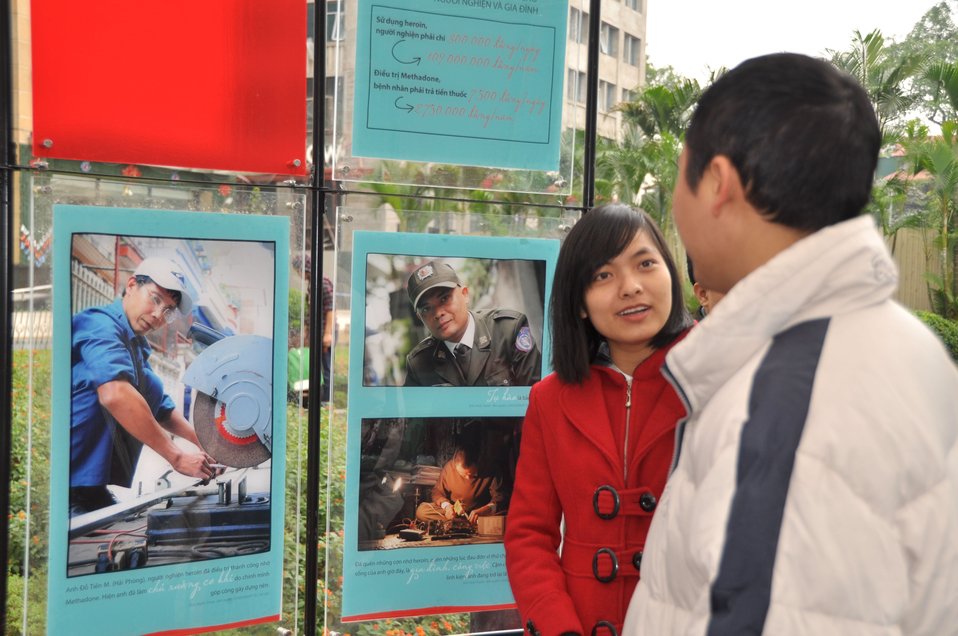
Discussing photos from Get Out and Get On photo exhibition

USAID/Vietnam